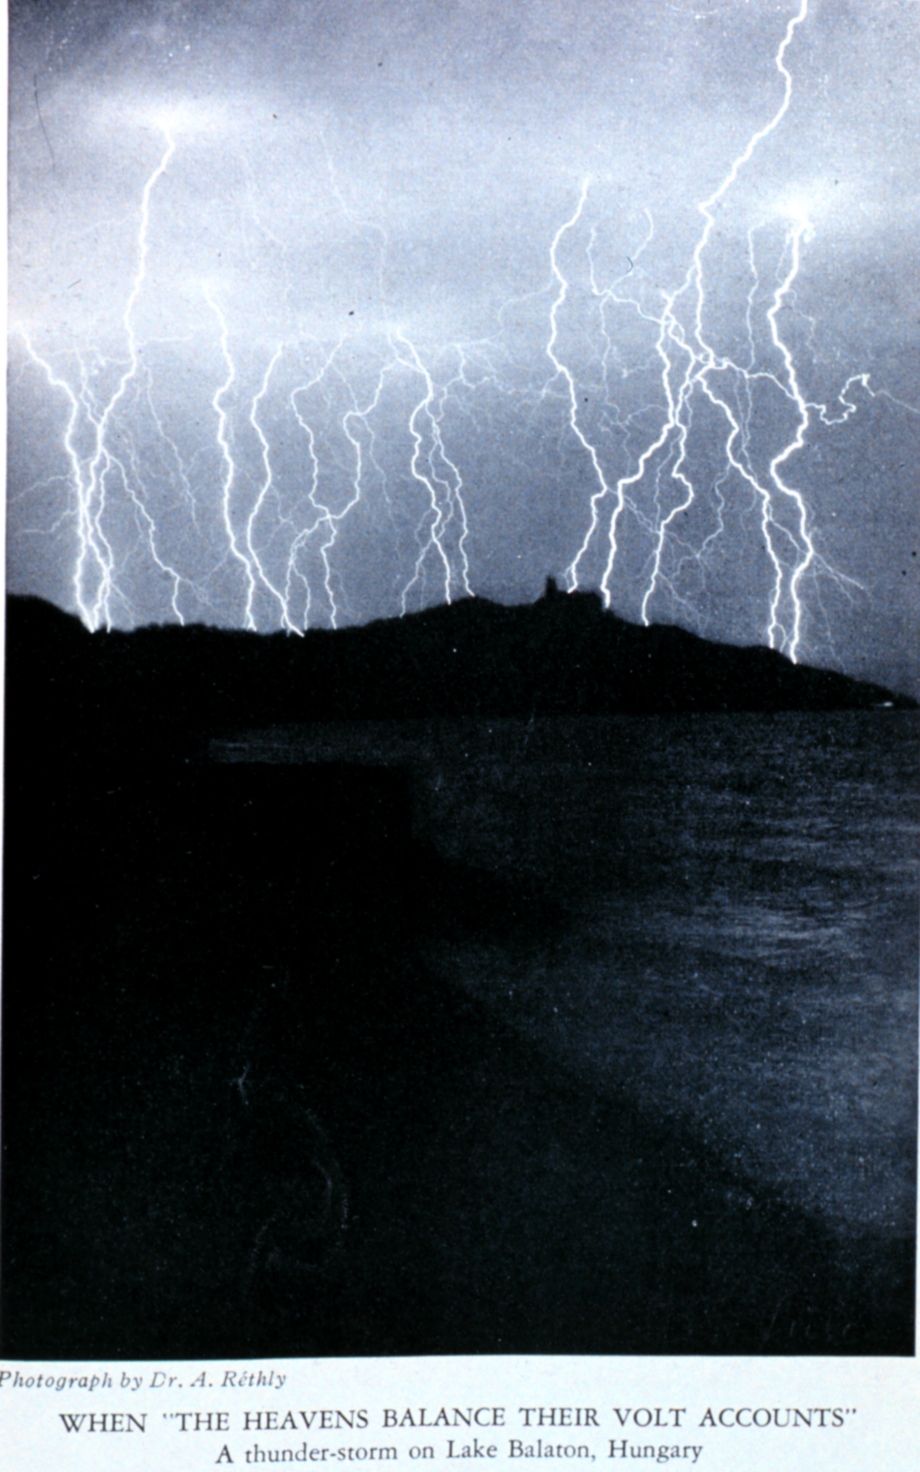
'When 'the heavens balance their volt accounts'.' A thunderstorm over Lake Balaton. In: 'The Realm of the Air' by Charles F. Talman, 1931. Library Call Number M/0030 T151r.